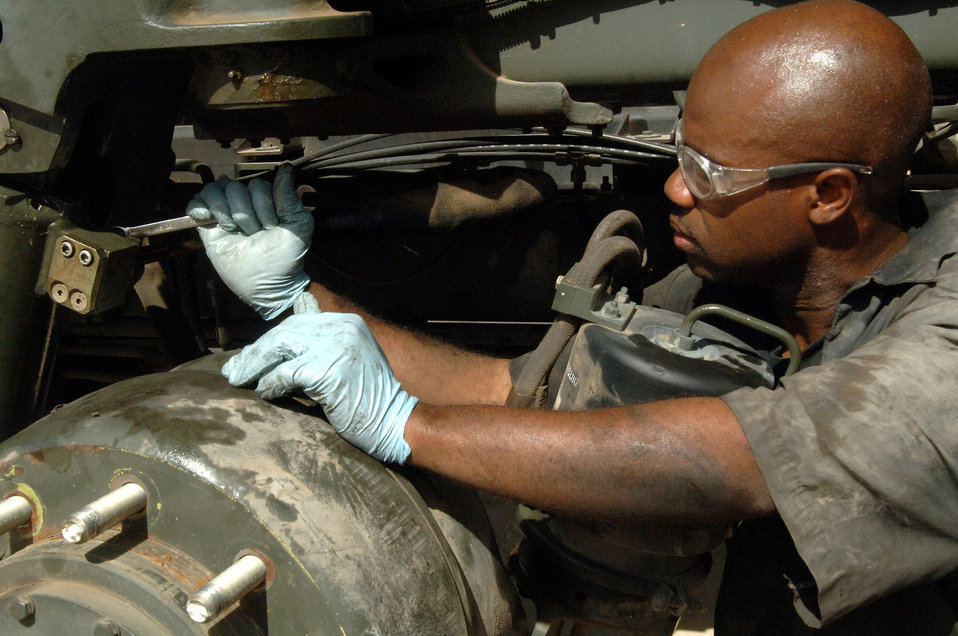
Vehicle maintainers keep Balad rollin'

Staff Sgt. Dwain Waldo replaces the hydraulic suspension cylinder on a 60-K loader April 25 at Balad Air Base, Iraq. Sergeant Waldo is a 332nd Expeditionary Logistics Readiness Squadron material handling equipment mechanic deployed from Minot Air Force Base, N.D.